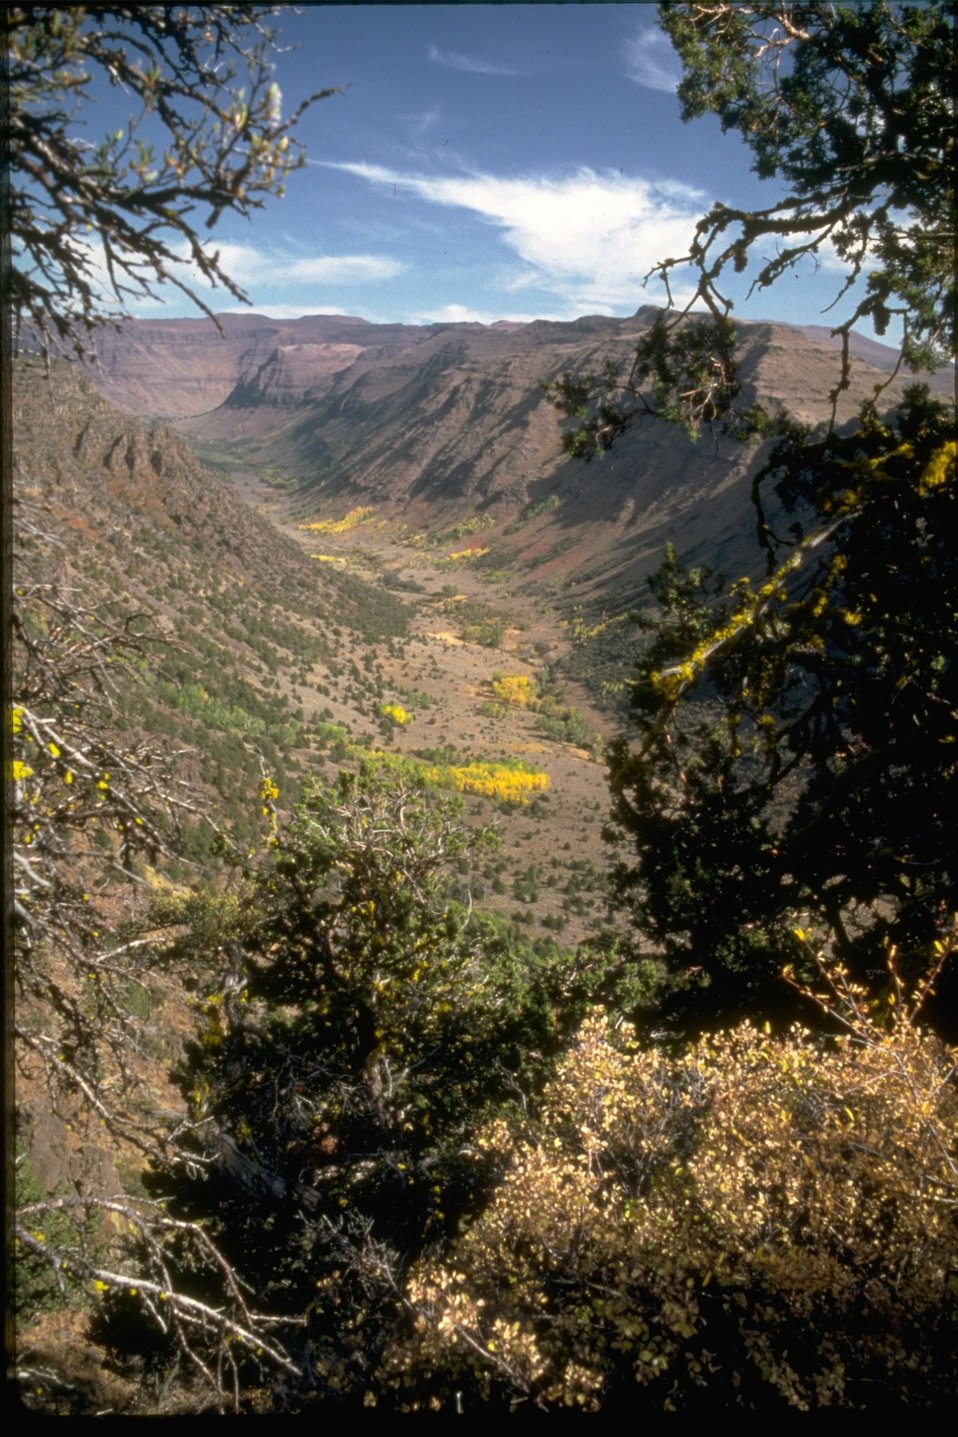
One of the Steens Gorges.